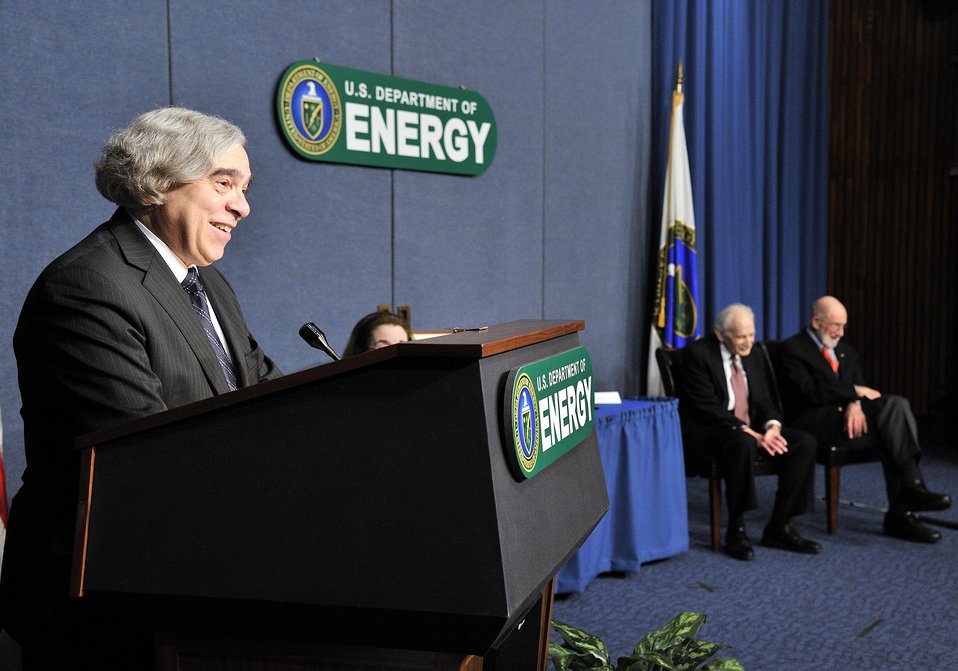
SECRETARY E. MONIZ PRESENTS ANDREW SESSLER AND ALLEN J. BARD WITH THE ENRICO FERMI AWARD ON FEBRUARY 3, 2014 AT THE U.S. DEPARTMENT OF ENERGY